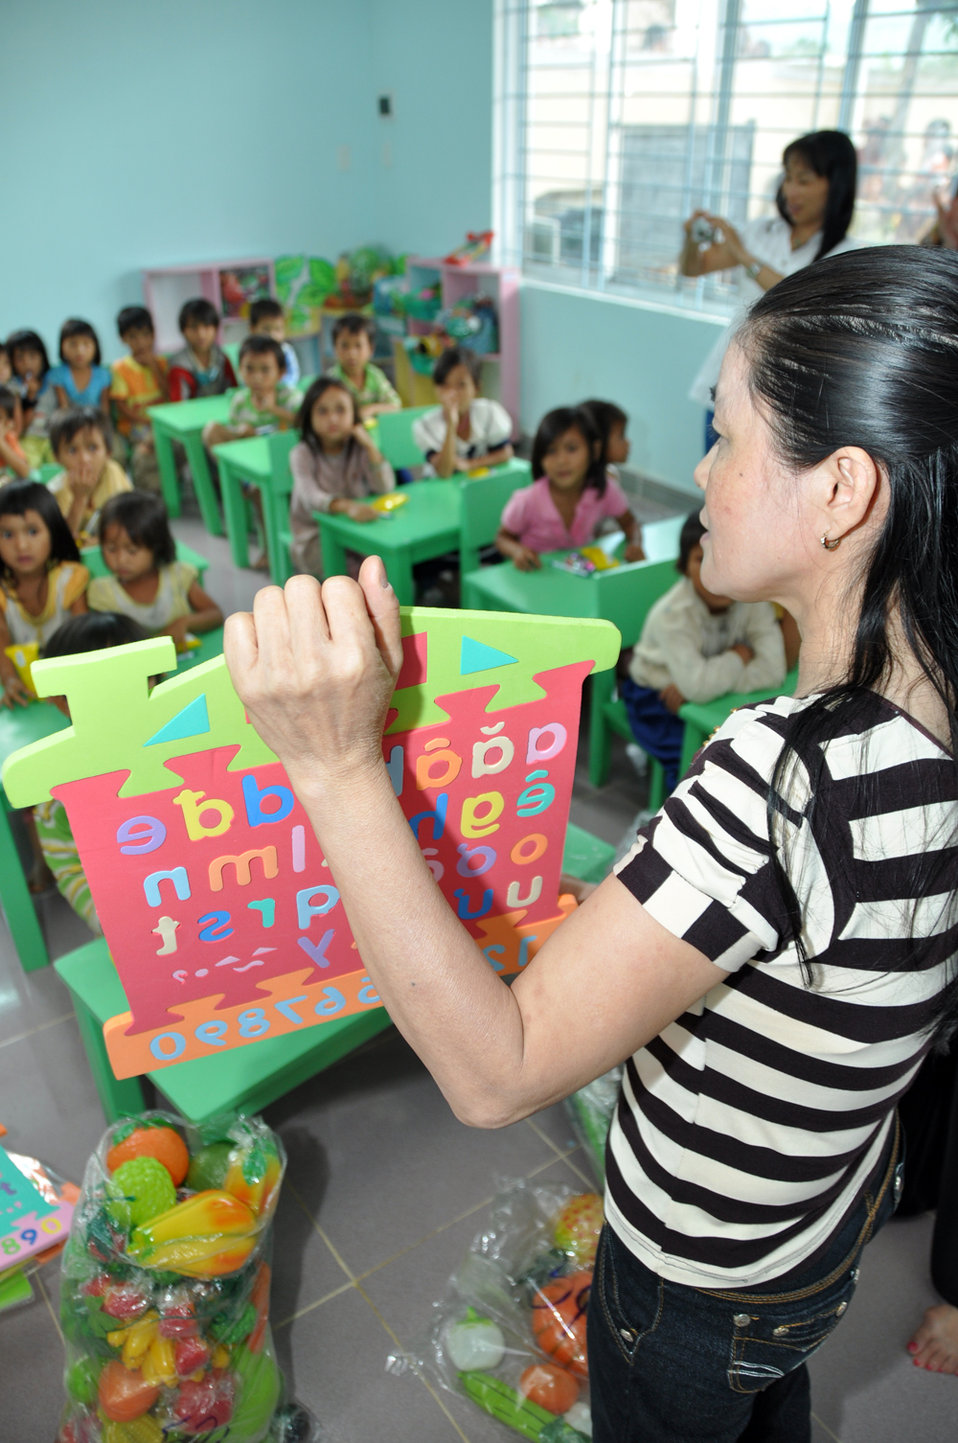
USAID contributes to refurbished pre-schools and teacher training in Vietnam